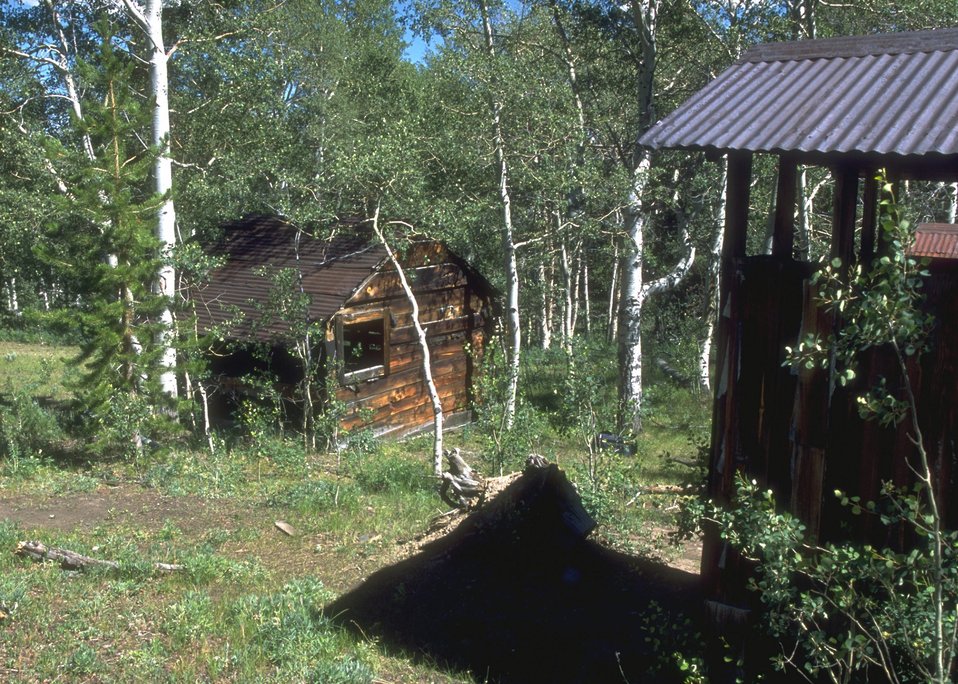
Structures at Miners Delight, Lander Field Office.